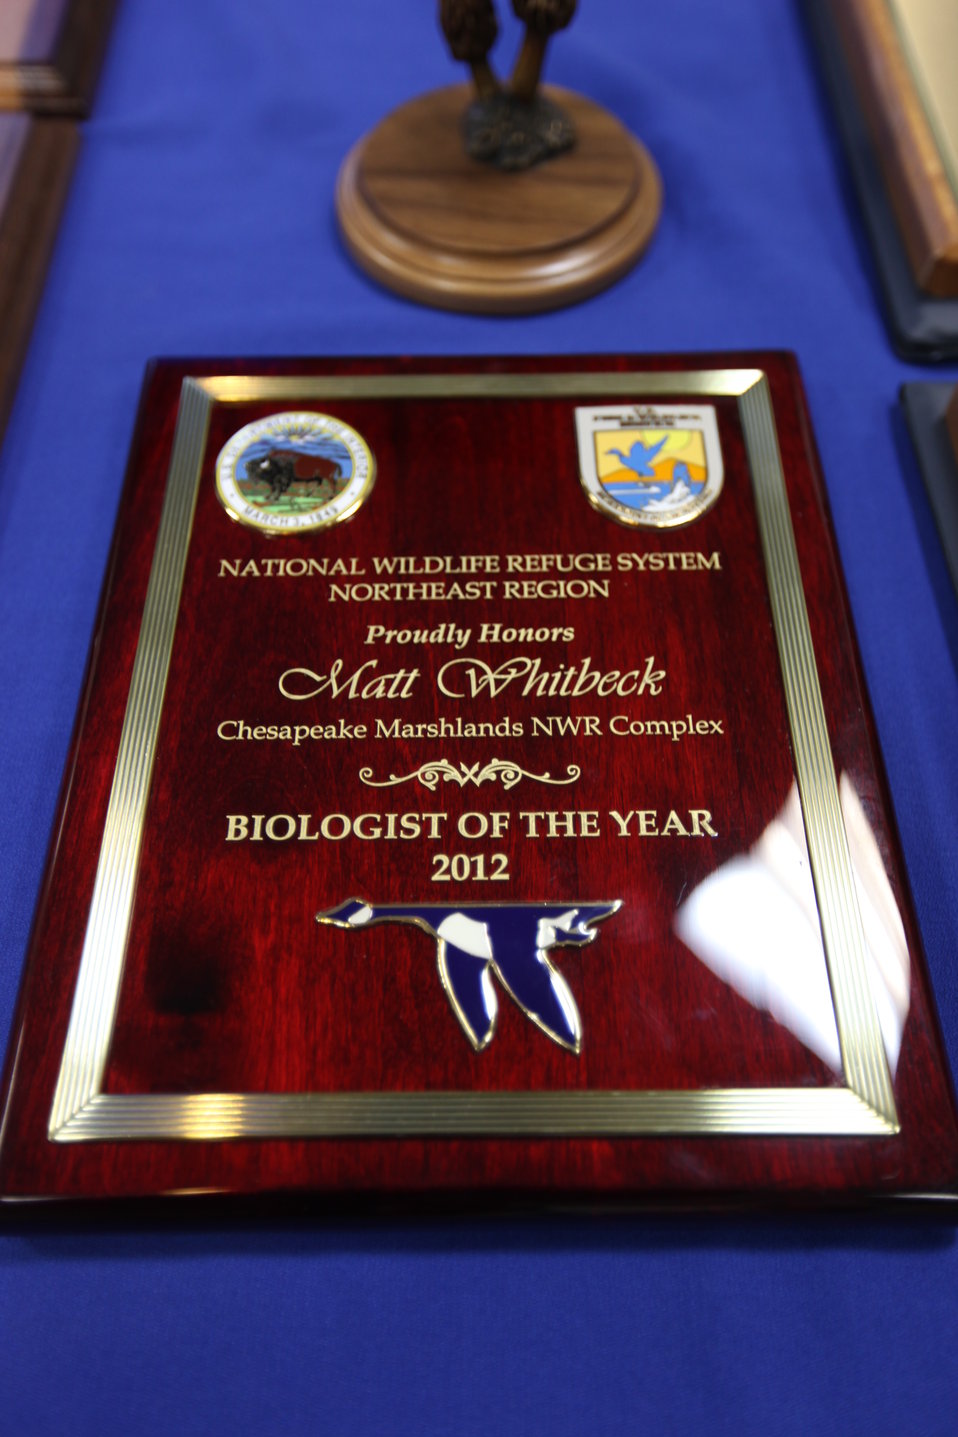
Northeast Region Employee Appreciation Awards

Biologist of the year award.